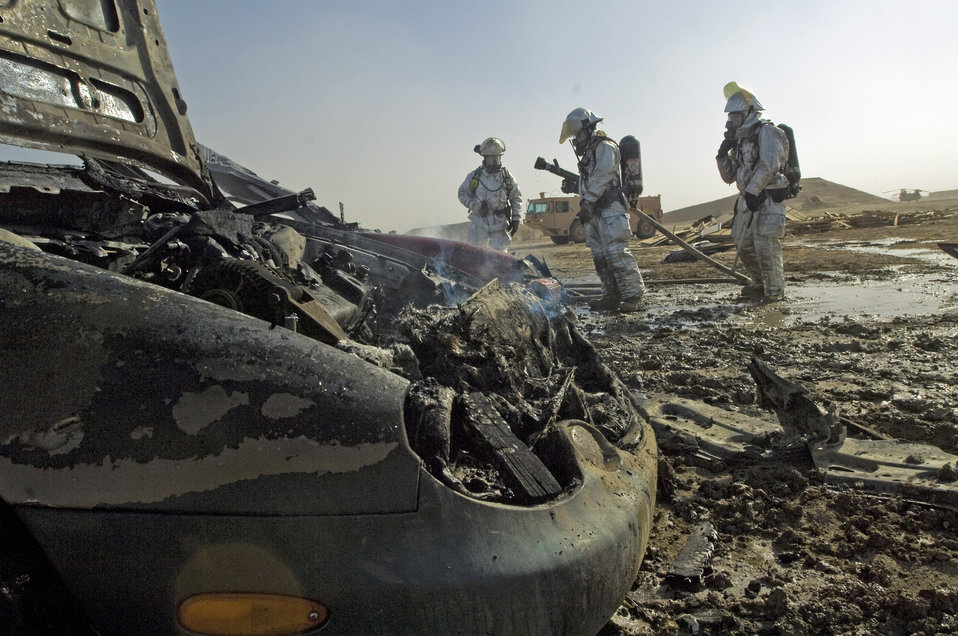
Testing under fire

Firefighters with the 407th Expeditionary Civil Engineer Squadron practice their response to a vehicle fire during an exercise Dec. 17 at Ali Base, Iraq.